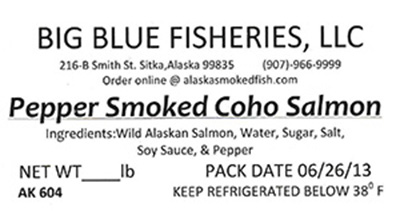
RECALLED – Salmon, Cod

September 30, 2013 – Product Recall – Big Blue Fisheries, Llc Recalls All Smoked Products From All Lots, Various Sizes, in Vacuum Packaging Because of Possible Health Risk.